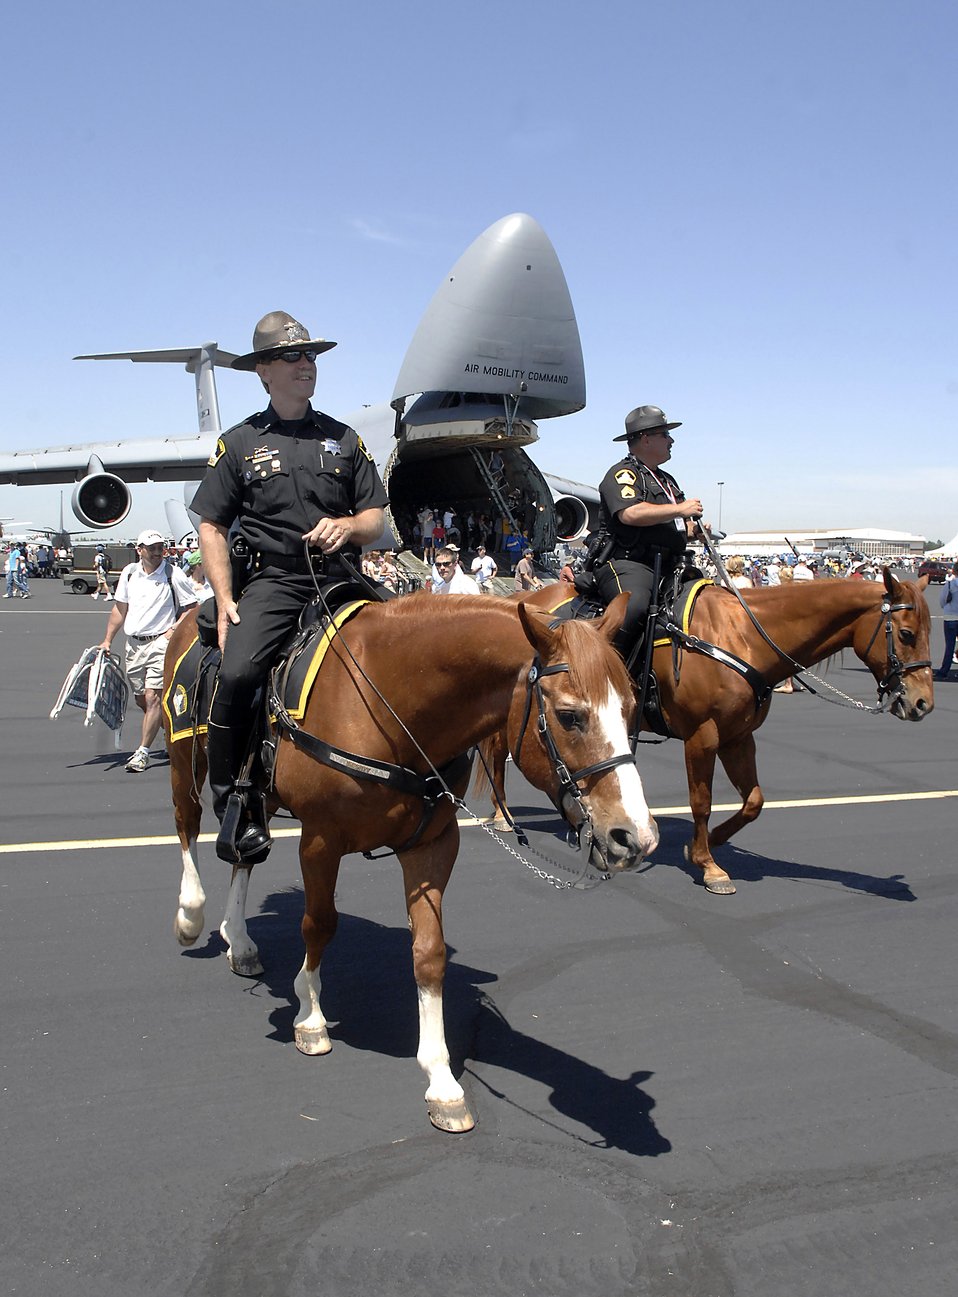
California Air Force Week

Lt. Milo Fitch ( left) and Sgt. Mark Maubach from the Sacramento County Sheriff's Department provide security at the California Capital Air Show in Sacramento, Calif., June 9. The air show was the last event of Air Force Week California. The purpose of Air Force Week is to inform and educate the American public about the importance and roles of the Air Force in America's national defense. More than 50,000 people attended the air show featuring the Air Force Thunderbirds and numerous Air Force aircraft.